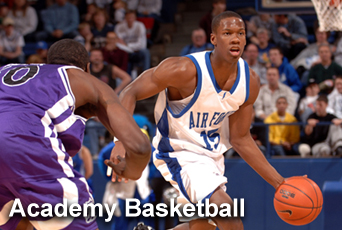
Academy basketball

For up-to-date scores on all U.S. Air Force Academy sports, visit their Web site at www.goairforcefalcons.com.